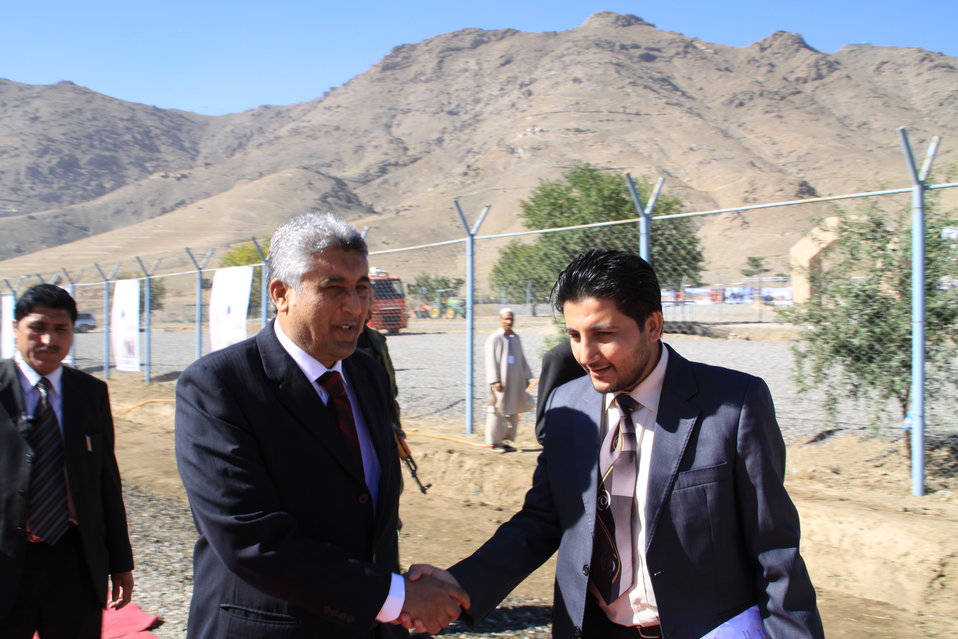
AVIPA Plus Wheat Seed Distribution 101005

US Ambassador Karl Eikenberry and USAID Acting Mission Director Kevin Brownawell joined the Minister of Agriculture, Irrigation and Livestock, H.E. Minister Mohammed Rahimi in signing a Memorandum of Understanding and distributing vouchers to area farmers for wheat and fertilizer.